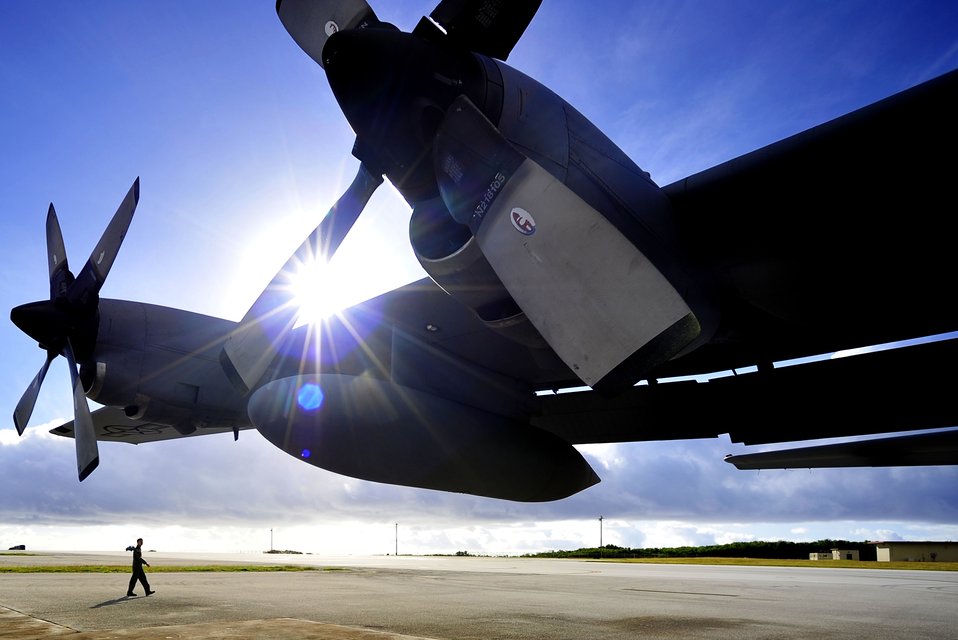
Cope North

Capt. Ryan Wong performs a preflight walk-around check near a C-130 Hercules Feb. 23, 2011, during exercise Cope North at Andersen Air Force Base, Guam. Captain Wong is a C-130 pilot from the 36th Airlift Squadron at Yokota Air Base, Japan.